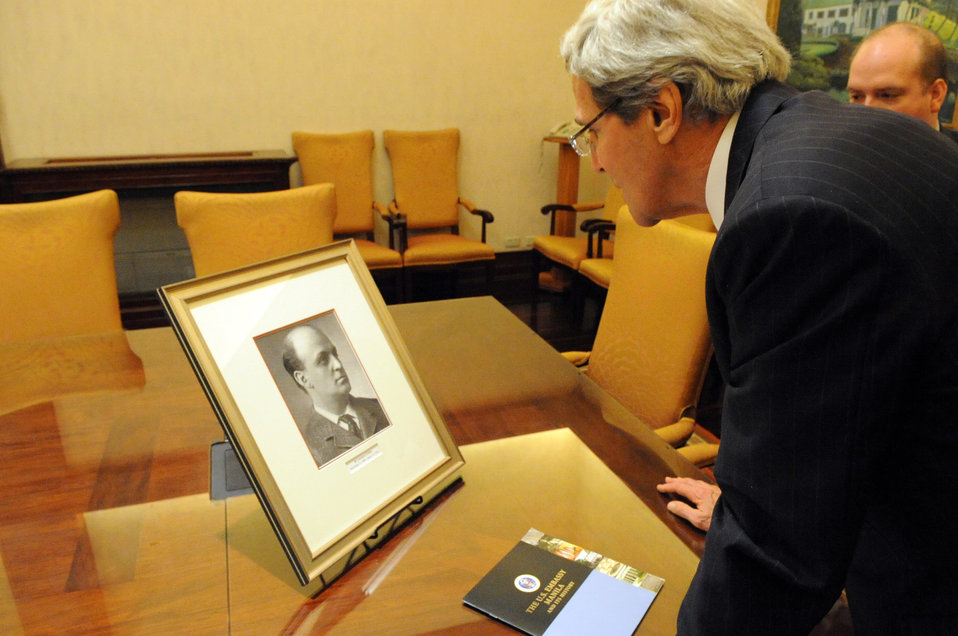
Secretary Kerry Examines the Portrait of a Relative Connected to the Philippines

U.S. Secretary of State John Kerry examines a portrait that hangs in the U.S. Embassy in Manila of his grandfather's cousin, W. Cameron Forbes, who was governor of the Philippines in the early 1900s. The Secretary was in Manila on December 17, 2013, for government meetings.